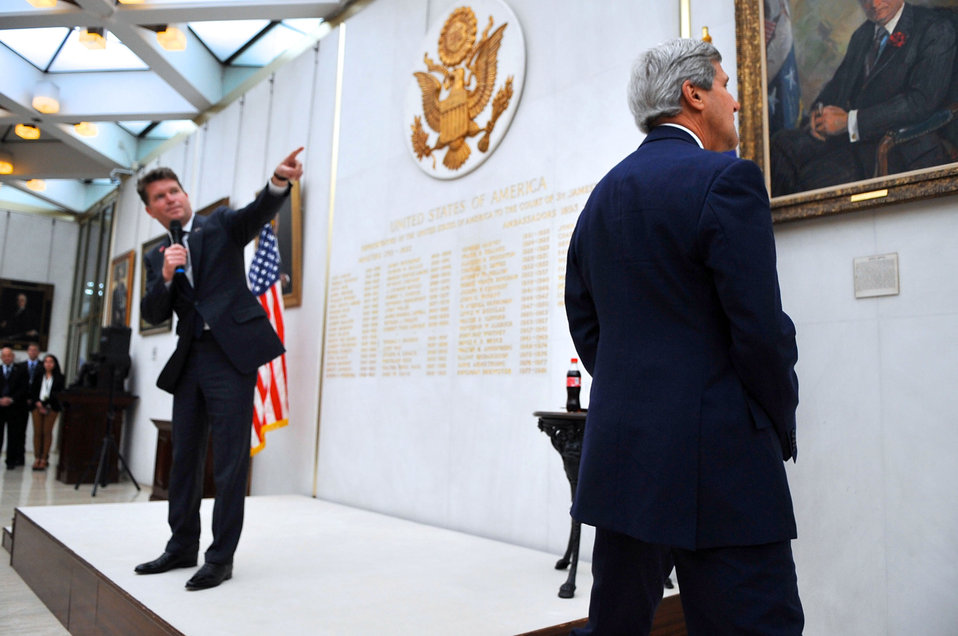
Ambassador Barzun Points Out Portrait to Secretary Kerry During Meet-and-Greet at Embassy London

U.S. Ambassador to the United Kingdom Matthew Barzun points out a portrait to U.S. Secretary of State John Kerry before he addressed the staff and families of Embassy London during a visit to the United Kingdom on June 13, 2014.